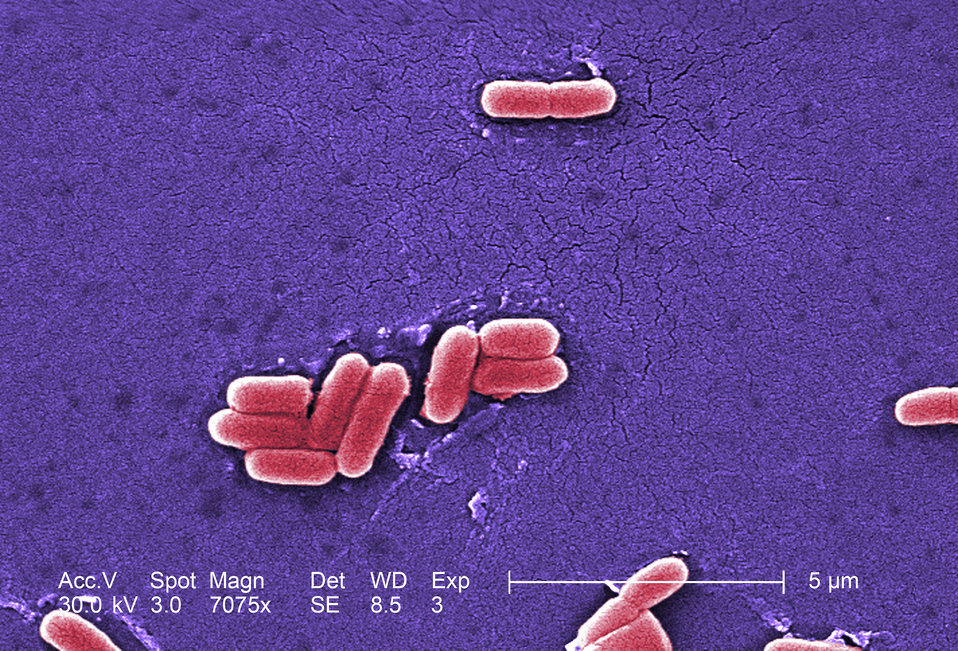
Under a magnification of 7075x, this colorized scanning electron micrograph (SEM) depicted a number of Gram-negative Escherichia coli bacteria of the strain O157:H7. E. coli O157:H7 is one of hundreds of strains of this bacterium. Although most strains are harmless, and live in the intestines of healthy humans and animals, this strain produces a powerful toxin, which can cause severe illness.E. coli O157:H7 was first recognized as a cause of illness in 1982 during an outbreak of severe bloody diarrhea; the outbreak was traced to contaminated hamburgers. Since then, most infections have come from eating undercooked ground beef.The combination of letters and numbers in the name of the bacterium refers to the specific markers found on its surface, which distinguishes it from other types of E. coli. See PHIL 8802 for a black and white version of this image.